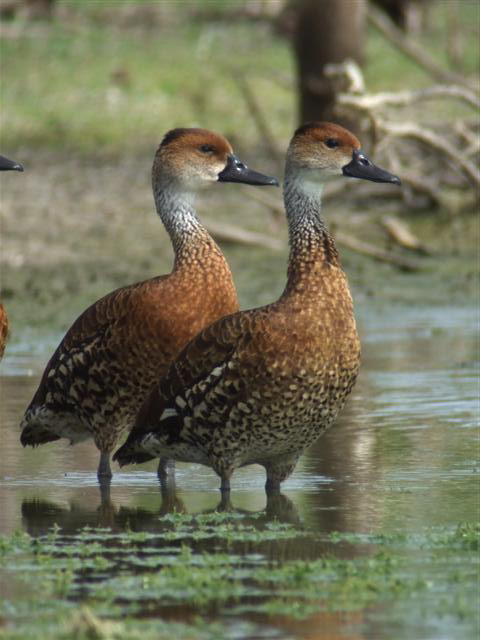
WIWD at Bethesda Dam in Antigua - 15

West Indian whistling duck pair at Bethesda Dam in Antigua.